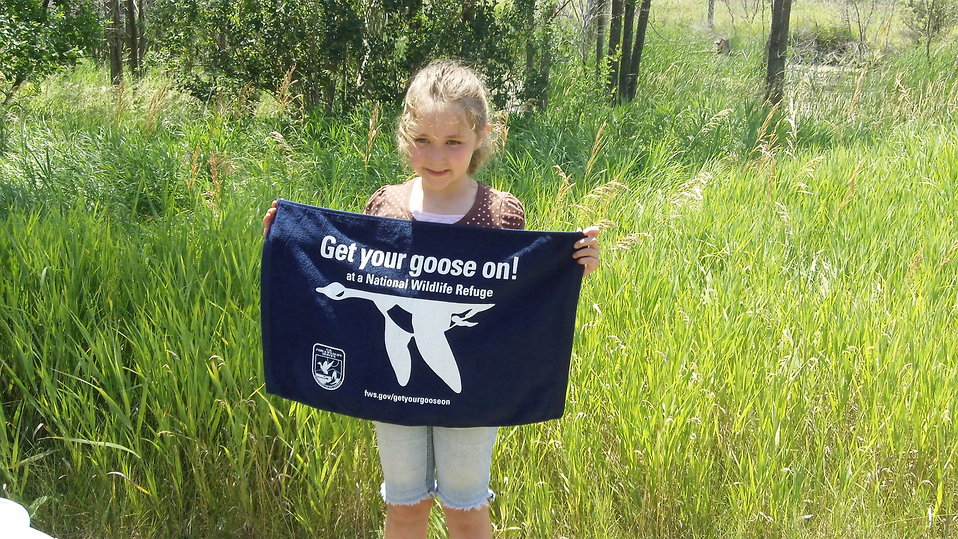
Get Your Goose On!

Photo taken at Huron Wetland Management District in east-central South Dakota.